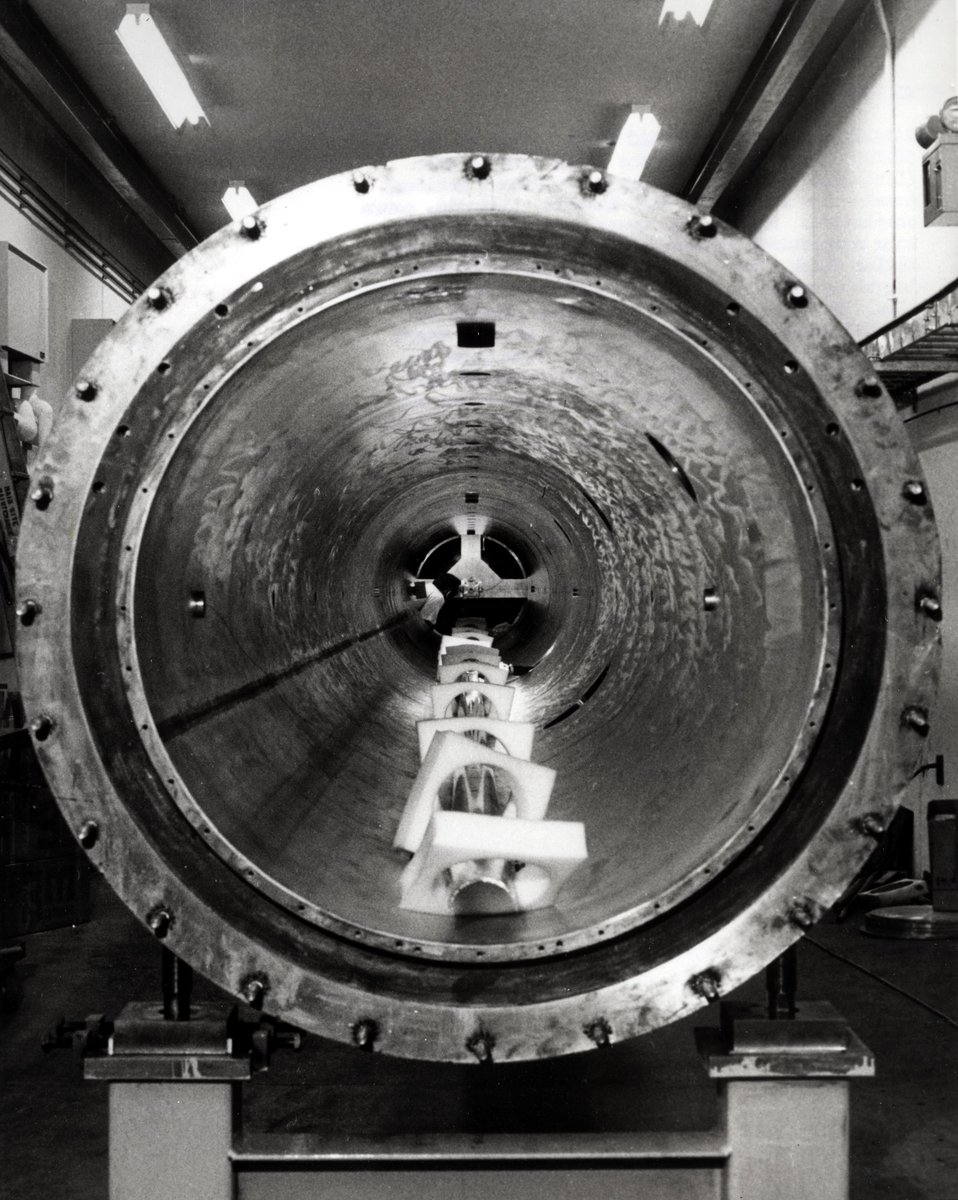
One of the nine 50-foot tanks comprising the Linac at the AEC NAL. c.1970